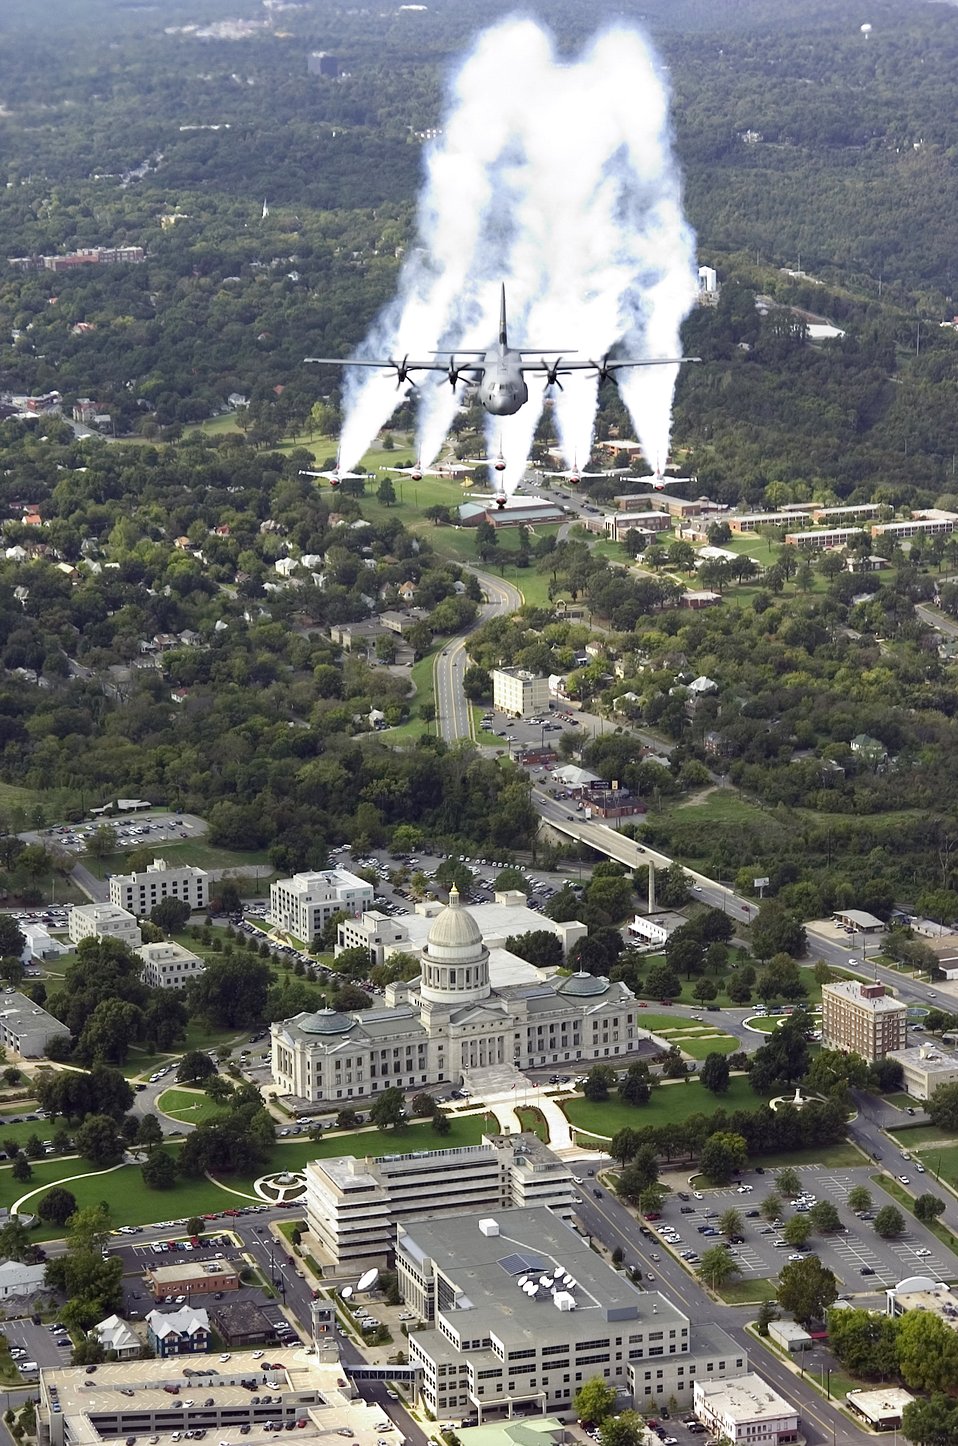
Soaring with 'Thunderbirds'

LITTLE ROCK AIR FORCE BASE, Ark. -- A C-130 Hercules leads Air Force Thunderbirds during a flyover of downtown Little Rock, Ark. The Thunderbirds were the main attraction for the base's 50th Anniversary Air Show on Oct. 7. The show brought crowds of more than 150,000 people to the base. Other performers included Team Aeroshell, the Red Baron Pizza Squadron and Shockwave the Jet Truck.